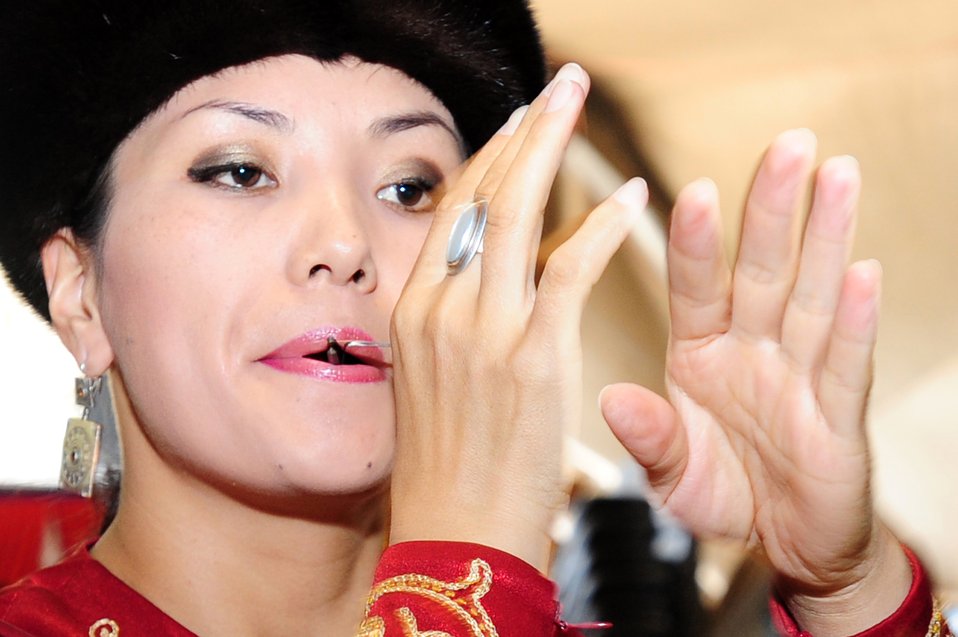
Airmen learn traditions during Kyrgyz Cultural Day

Gulinara Raimalieva plays traditional Kyrgyz music on the temir komuz during a Kyrgyz Culture Day at the Transit Center at Manas, Kyrgyzstan, Oct. 24, 2009.